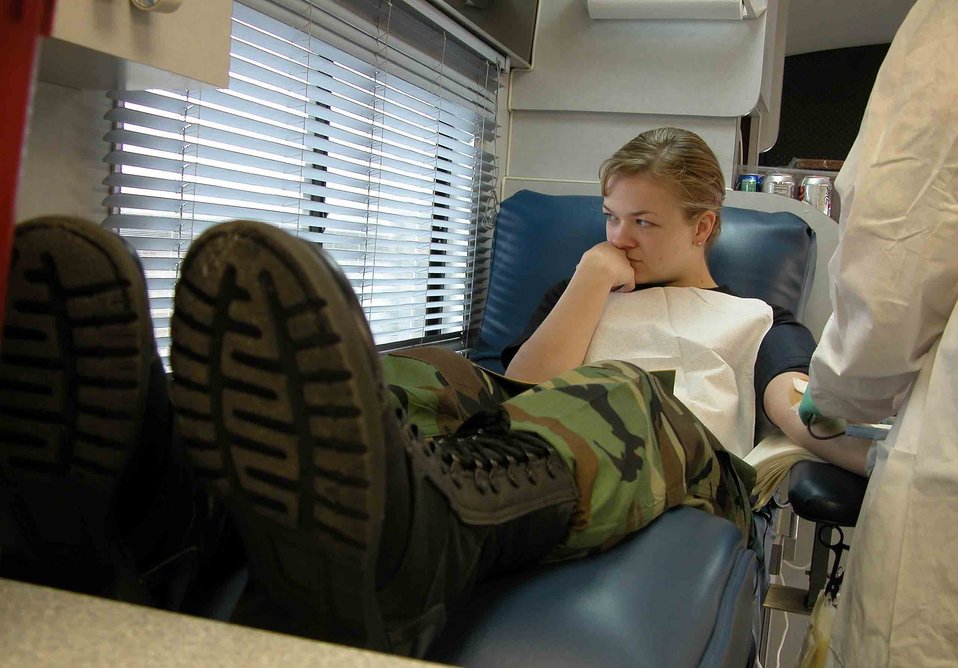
Don't look now

EGLIN AIR FORCE BASE, Fla. -- Second Lt. Alyson Smith turns away and concentrates on something outside the window of a mobile blood center as she has her blood drawn. The blood center visits here twice a week collecting donations supporting the base and area hospitals. Lieutenant Smith is assigned to the 96th Air Base Wing.